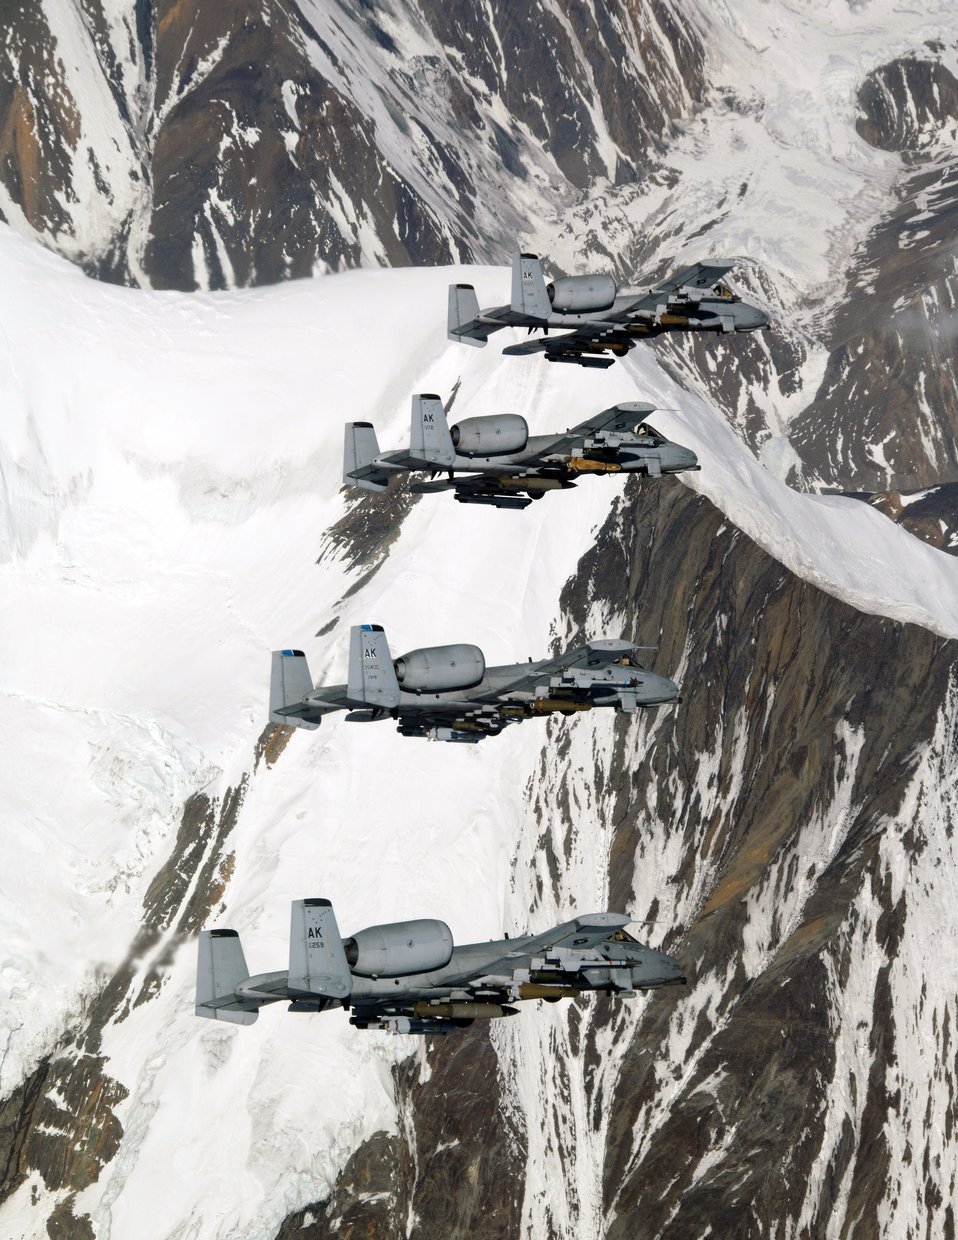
Thunder and lightning

A-10 Thunderbolt IIs fly over the Pacific Alaska Range Complex April 24 during live-fire training. The A-10s are from the 355th Fighter Squadron from Eielson Air Force Base, Alaska. Members from the 355th FS are tasked to provide mission ready A-10s and a search and rescue capability, in Alaska and deployed sites worldwide.